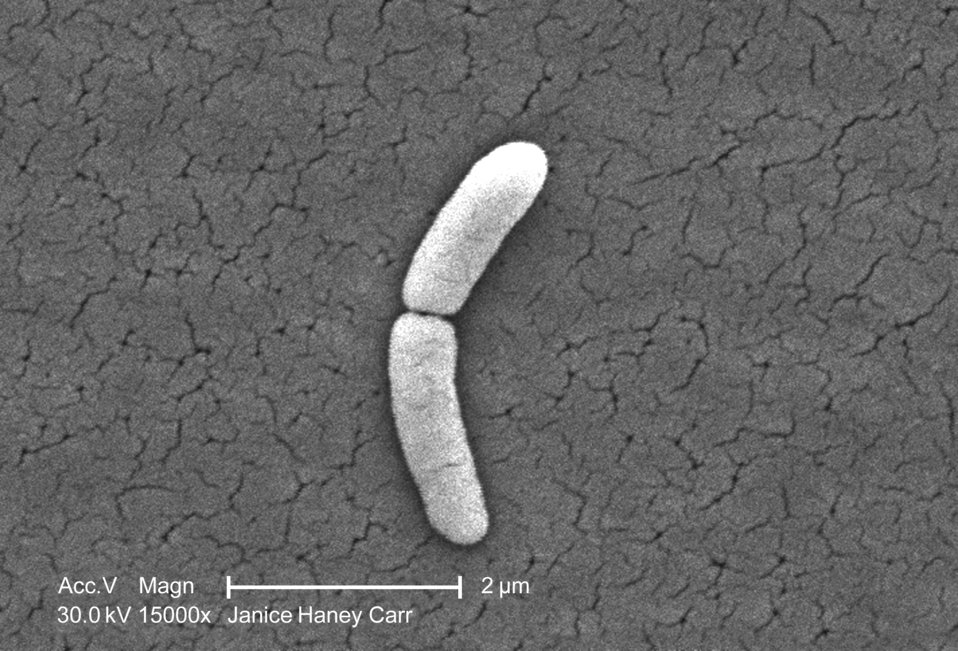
Under a very high magnification of 15000X, this scanning electron micrograph (SEM) revealed the presence of a single Gram-negative Salmonella typhimurium bacterium, which was imaged right at the point where it was undergoing the process of cell division, resulting in the formation of two separate organisms. This dividing bacterium had been isolated from a pure culture.